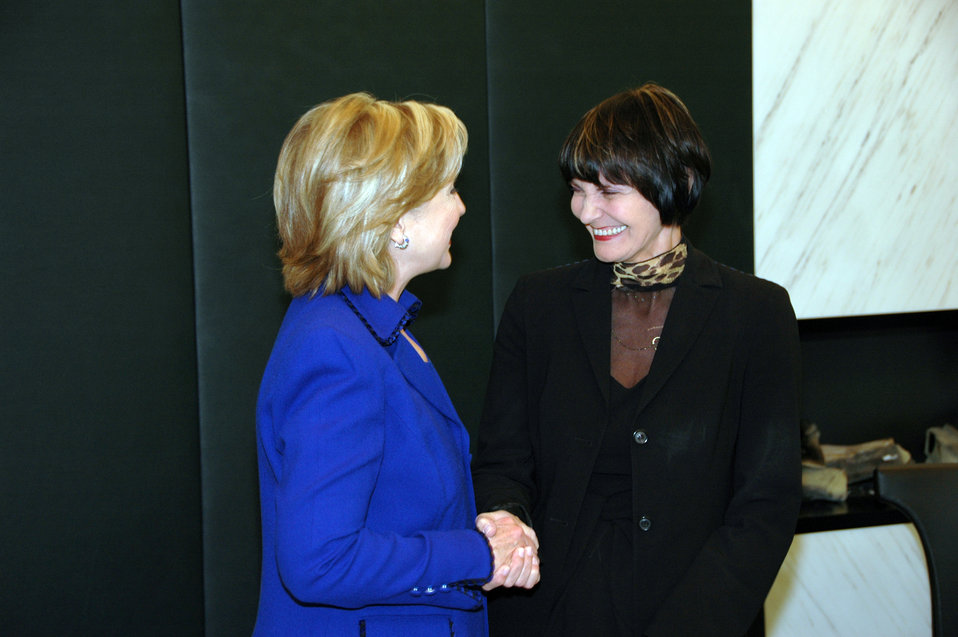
Secretary Clinton Meets Swiss Foreign Minister

U.S. Secretary of State Hillary Rodham Clinton with Swiss Foreign Minister Micheline Calmy-Rey in Zurich, Switzerland October 9, 2009.